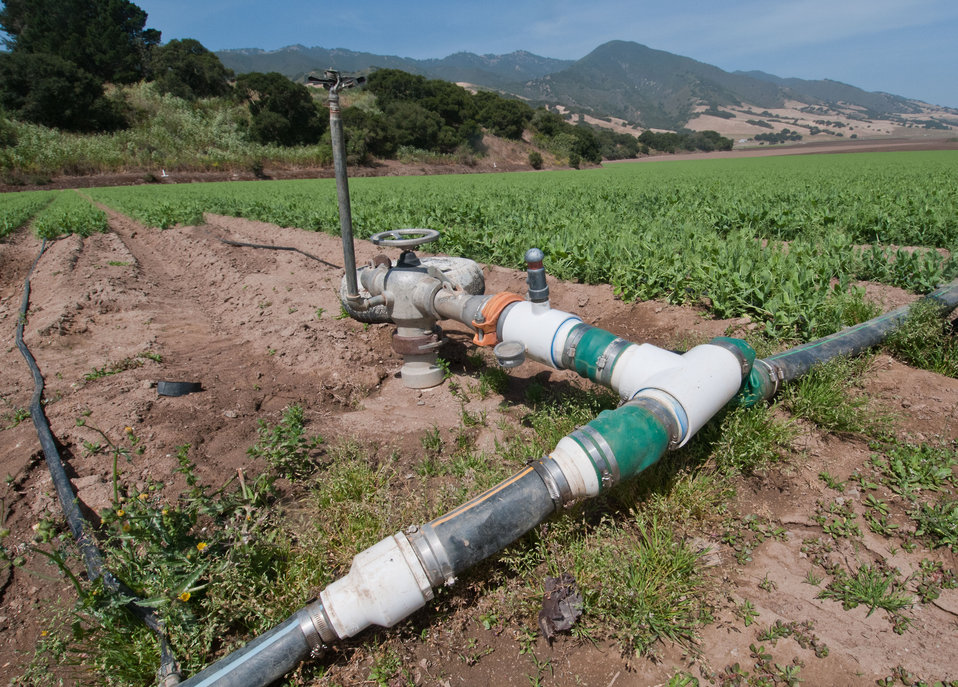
Micro irrigation begins with an economical reuse of irrigation water hydrants at Leafy Greens Farm in the Salinas Valley of California on Thursday, June 16, 2011. A series of reduction couplings lead to the collapsible header tube that supply water to dozens of separate tubes. That take water to every plant in the row. Water evaporation is kept to a minimum because water is delivered to the soil, not sprayed into the air or to exposed areas.